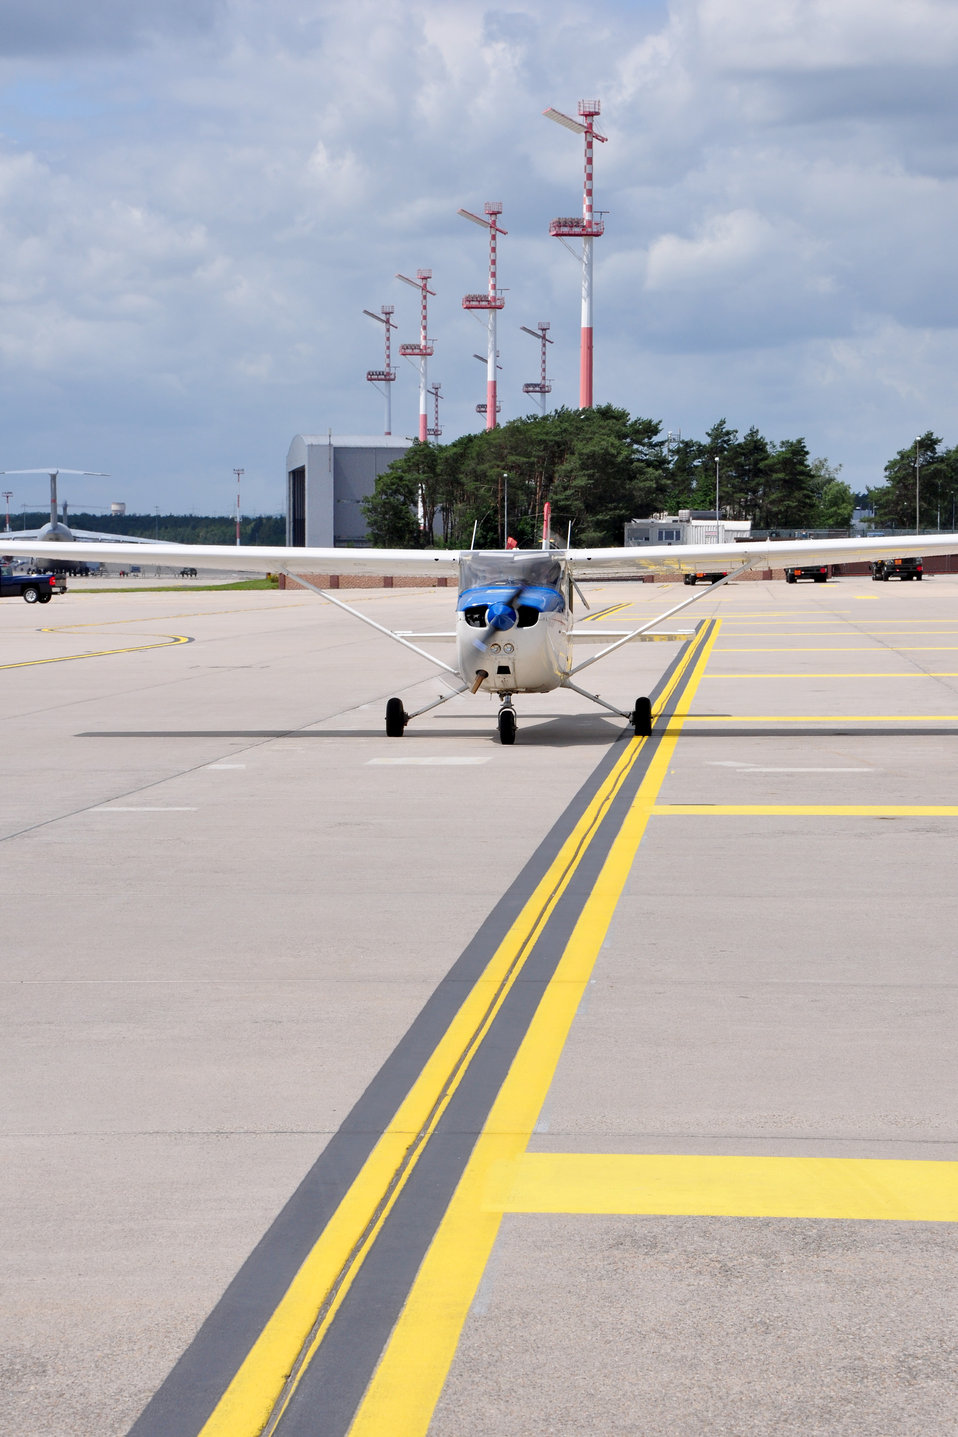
Airman takes to the skies

A Cessna 172 piloted by Lt. Col. Rich Radvanyi and co-piloted by Airman 1st Class Nicholas Fennen pulls away from the Ramstein Air Base, Germany, distinguished visitor lounge June 22, 2012. The flight was part of the Ramstein Daedalians Aviation Incentive Flight program, which provides quarterly aviation incentive flights to deserving young Airmen and gives them the chance to live a childhood fantasy of flight.